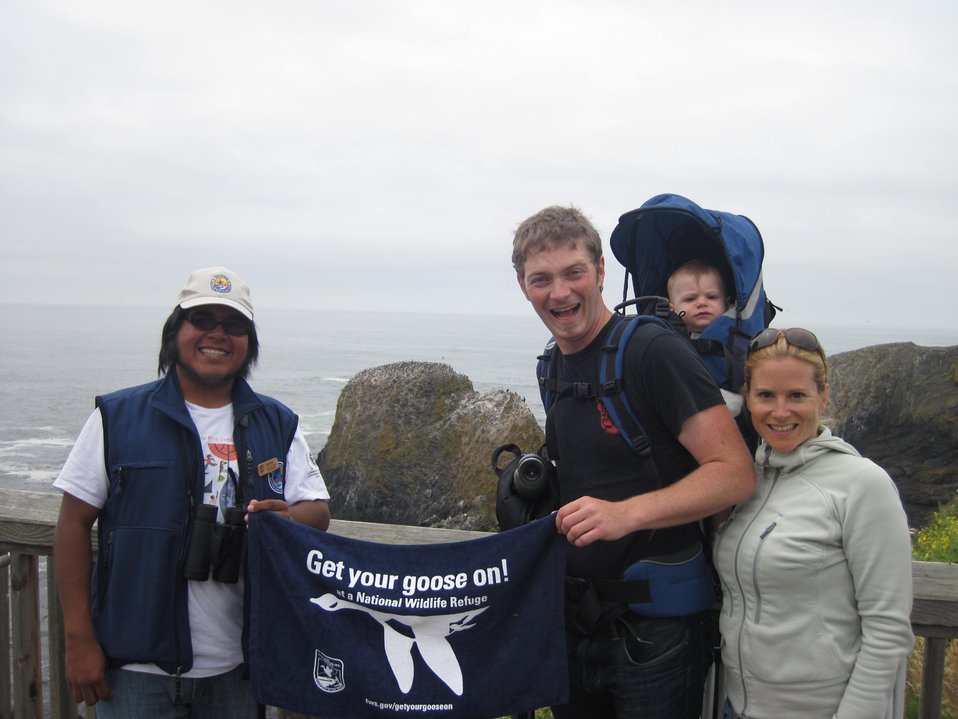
Get Your Goose On!

Visitors from Vancouver, B.C. with bilingual wildlife interpreter Sammy Chavez Get Their Goose On while learning about seabirds nesting at Oregon Islands NWR.